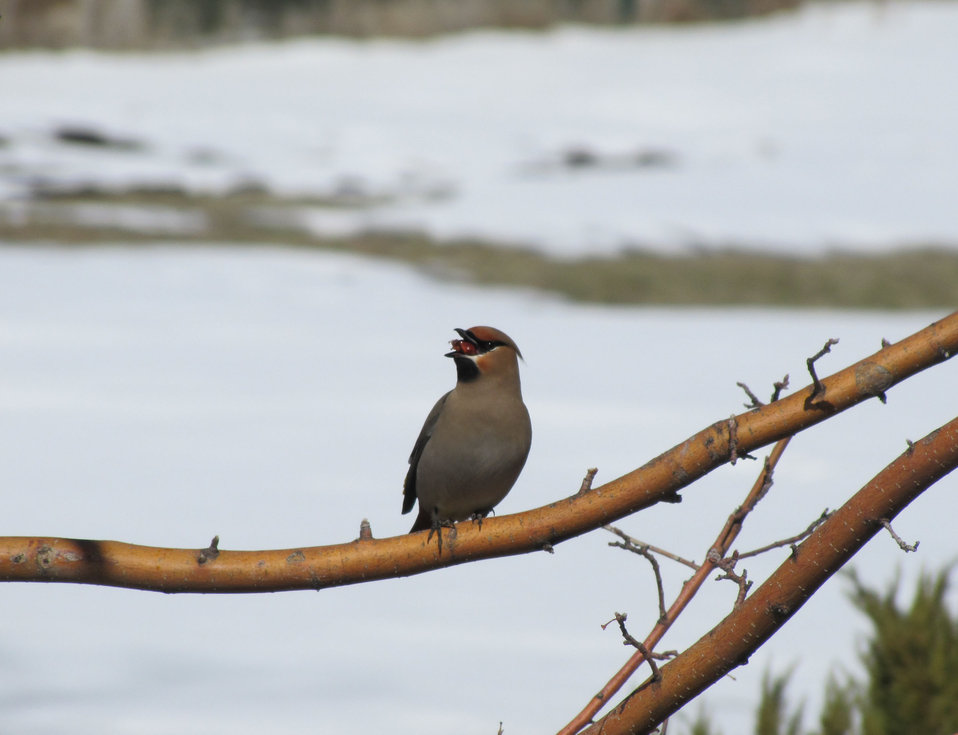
Swallowing it Whole

A Bohemian Waxwing feeds on a tasty treat outside of the National Elk Refuge administrative offices.